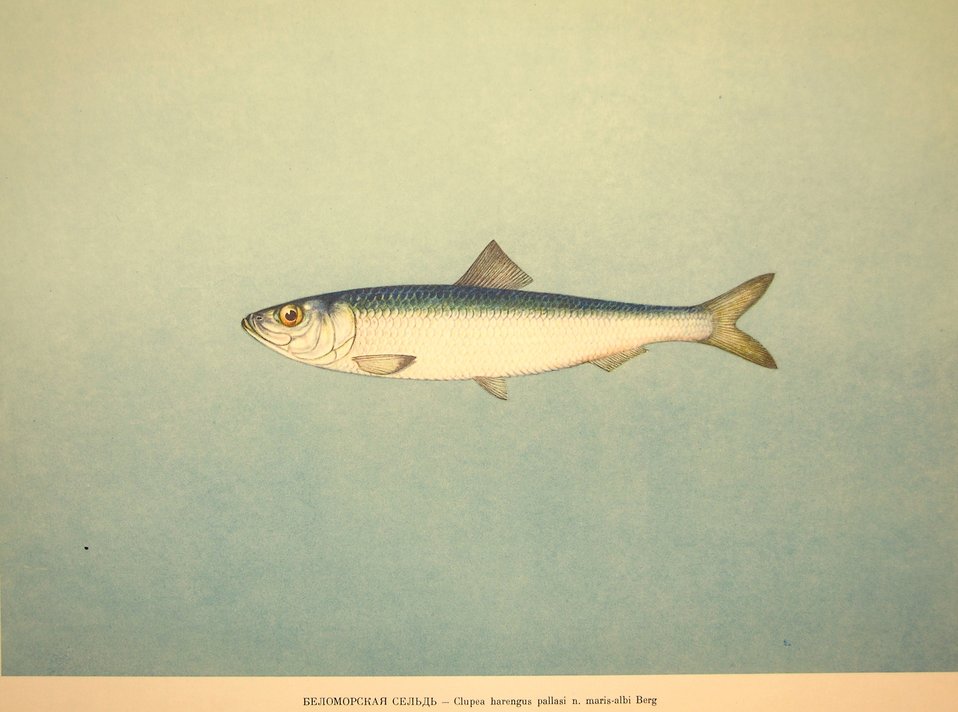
Plate 33. Clupea harengus pallasi n. maris-albi Berg. Family Clupeidae. In: Fishery Resources of the USSR, N.N.Kondakov, Artist Editor. 1957. NOAA Central Library Call Number: SH91.R9 1957.